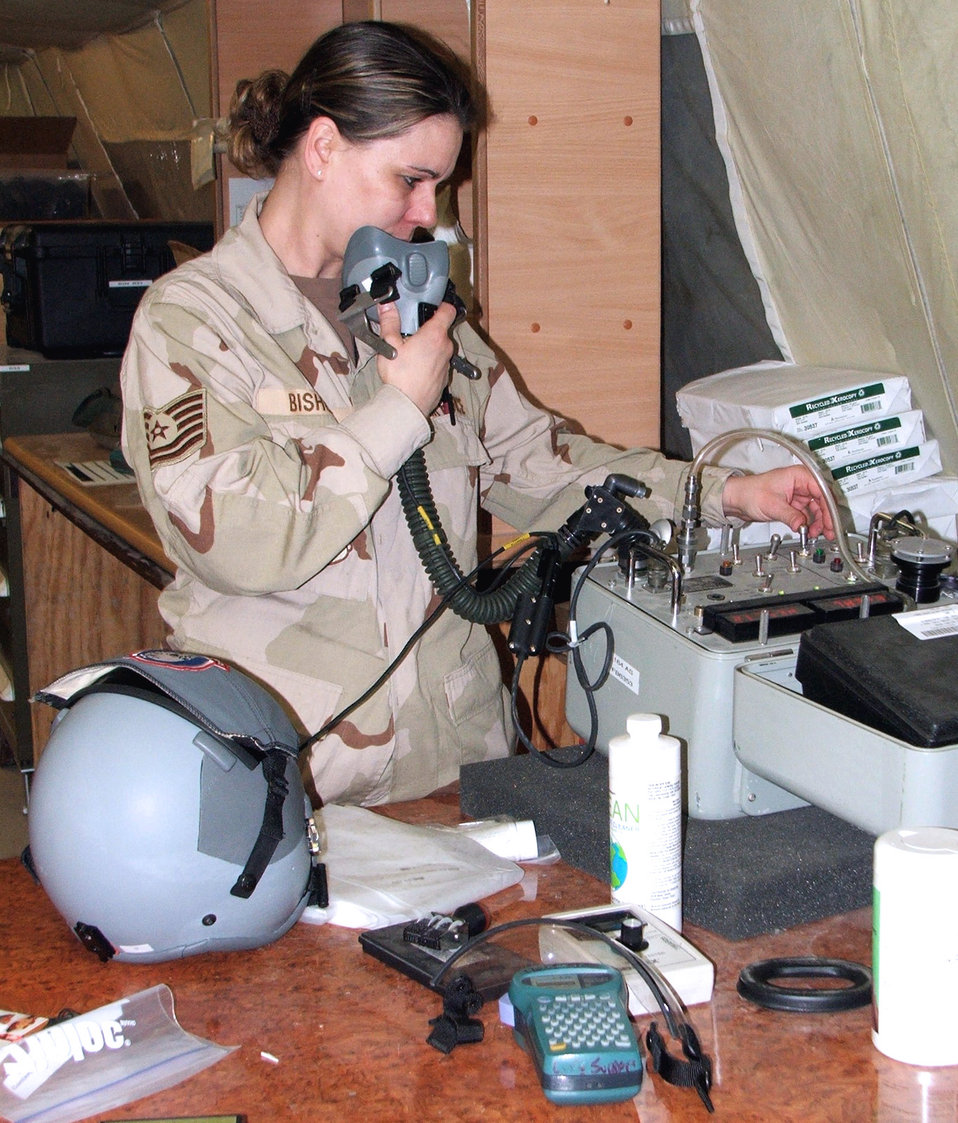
Expeditionary life-support techs keep OEF airlifters rescue ready

KARSHI-KHANABAD, Uzbekistan -- Tech. Sgt. Heidi Bishop inspects helmets and masks for aircrews deployed here. She is assigned to the 774th Expeditionary Airlift Squadron life-support section and is deployed from Mansfield, Ohio.